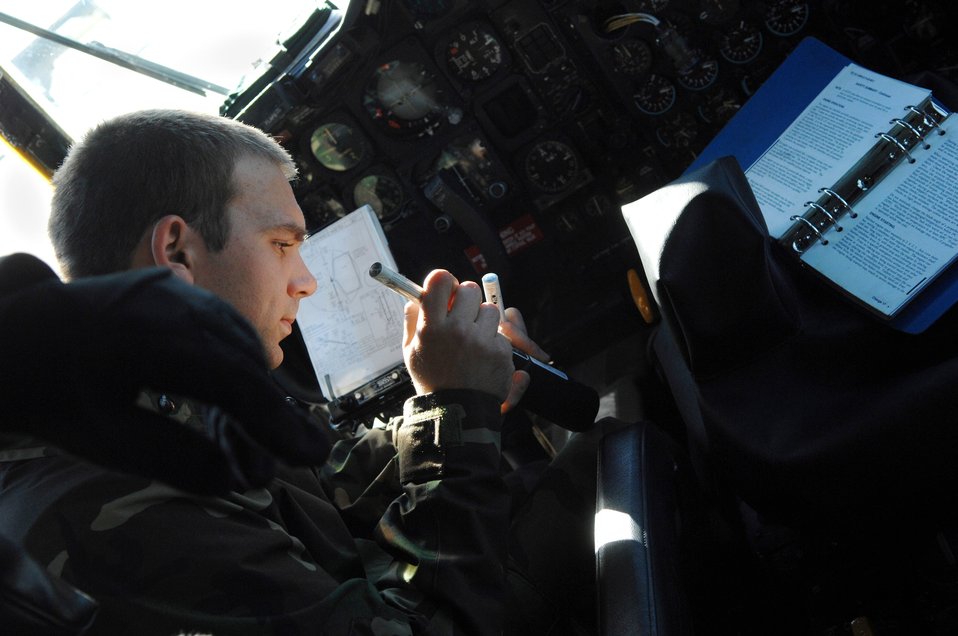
Moody muscle moves mission

Staff Sgt. James O'Neal prepares for an engine run on an HC-130P Combat King Jan. 3 at Moody Air Force Base, Ga. Engines that have monitoring instruments replaced must be ran to ensure they are providing the proper readings. Sergeant O'Neal is assigned to the 723rd Aircraft Maintenance Squadron.